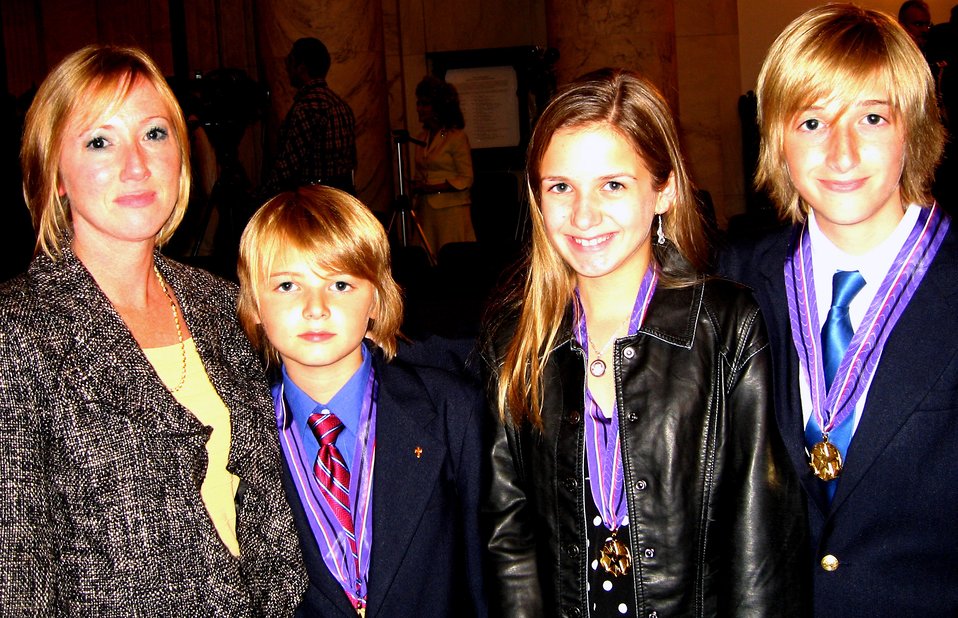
Children of fallen troops honored at remembrance ceremonies

Left to right: Beth Downs and her children Bailey, 10, Elle, 11, and Chandler, 13, attend the White House Commission on Remembrance-sponsored ceremony in the Russell Senate Office Building in Washington, D.C., Oct. 29. Their father, Air Force Maj. William